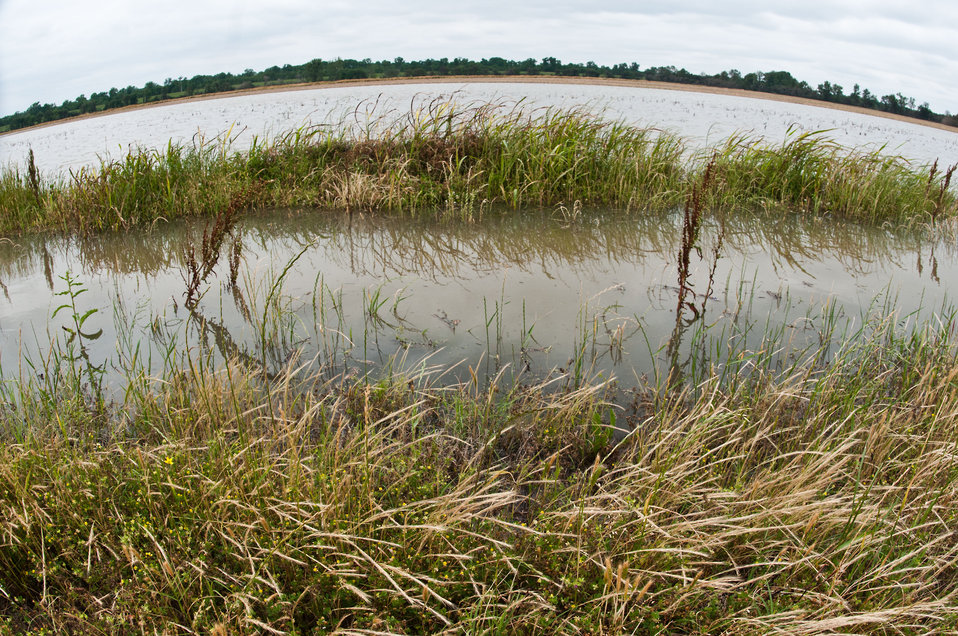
Floods waters from Mississippi River inundated casinos and farms that surround Tunica, MS, on Sunday, May 15. 2011.